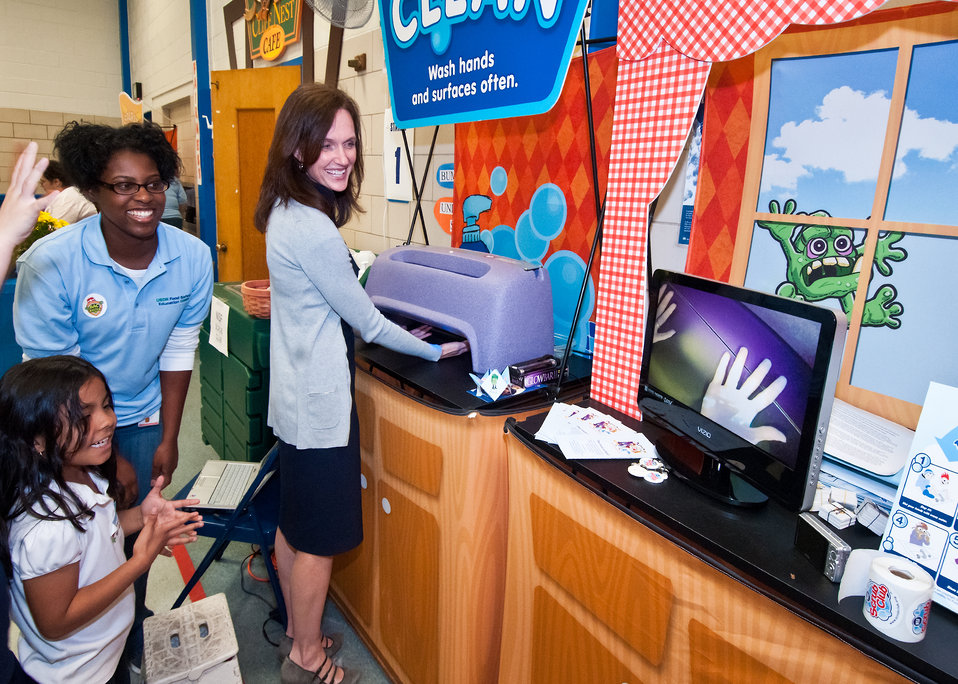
Iesha Jones, Food Safety Inspection Service and Joanna Rios a first grade student (left) watch to see if Dr. Elizabeth Hagen (right), Undersecretary Food Safety has any bacteria on her hands after washing them. Undersecretary Hagen is viewing her hands under ultra-violet light to make sure he has washed the bacteria off her hands. The United States Department of Agriculture, Food Safety Inspection Service held a Food Safety Education Camp at Maryland City Elementary School, in Laurel, MD, on Thursday, May 5, 2011.